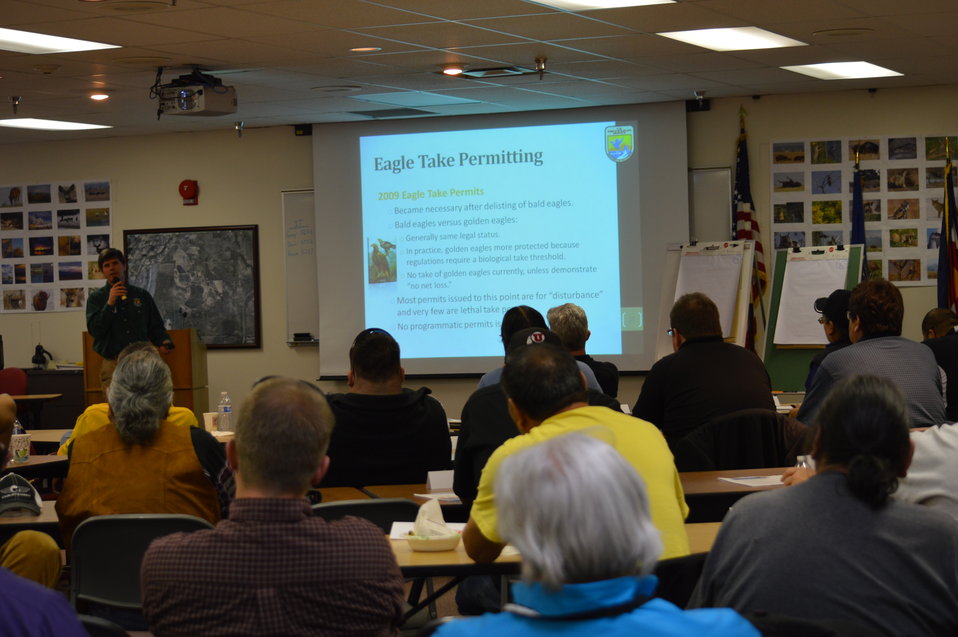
Eagle Summit III

Clint Riley starts his presentation at the Eagle Summit III in Denver, Colorado on March 20, 2014 at the Rocky Mountain Arsenal National Wildlife Refuge.